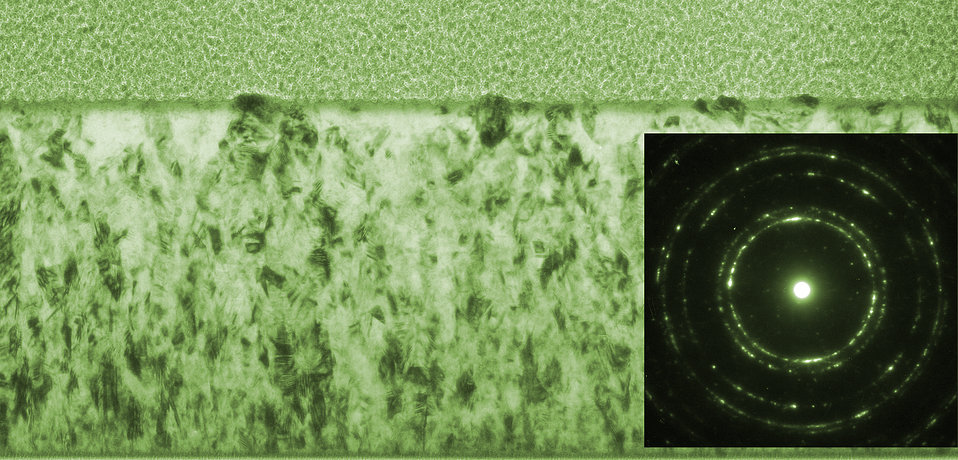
Magnetic fields; Transmission electron microscope

Transmission electron microscope (TEM) images show sections of a continuous 400-nanometer-thick magnetic film of a nickle-iron-copper-molybdenum alloy. By relieving strain in the film, the silver layers promote the growth of notably larger crystal grains in the layered material as compared to the monolithic film (several are highlighted for emphasis.) Electron differaction patterns (insets) tell a similar story - the material with larger crystal grains display sharper, more discrete scattering patterns. (Color added for clarity.)